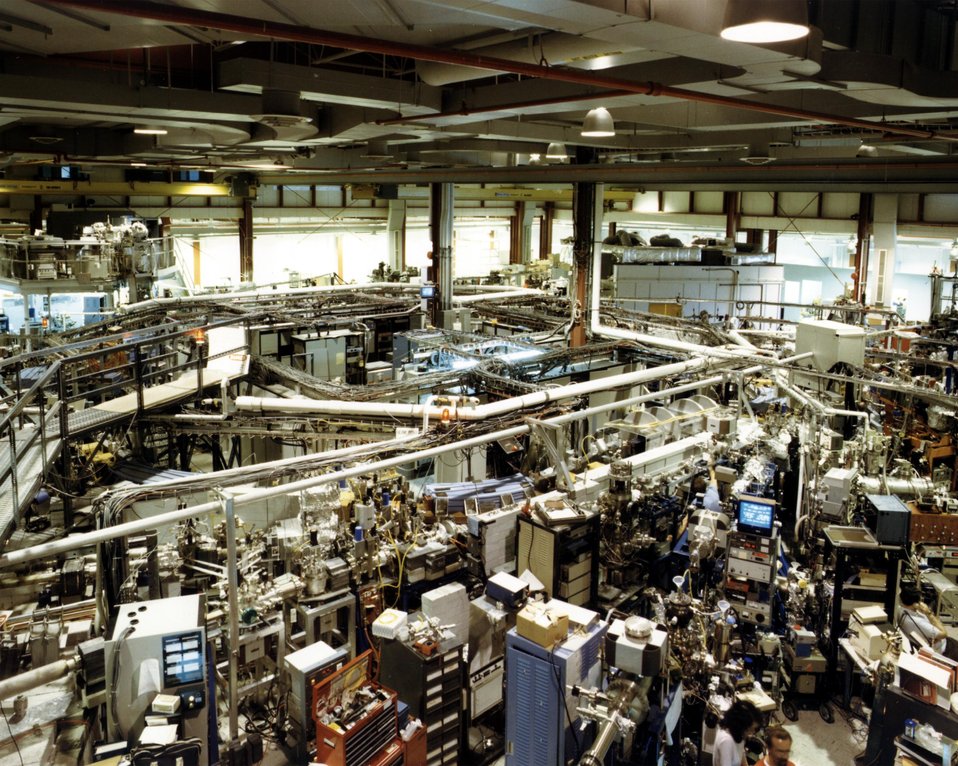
GENERAL VIEW OF THE EXPERIMENTAL FLOOR OF THE VACUUM ULTRAVIOLET (VUV) RING OF THE NSLS.

THE NATIONAL SYNCHROTRON LIGHT SOURCE IS THE NATION'S LARGEST FACILITY DEDICATED SOLELY TO THE PRODUCTION OF SYNCHROTRON RADIATION. IT PROVIDES INTENSE BEAMS OF X-RAYS AND ULTRAVIOLET LIGHT FOR USE BY SCIENTISTS FROM ALL OVER THE COUNTRY, FOR RESEARCH IN PHYSICS, CHEMISTRY, BIOLOGY AND VARIOUS TECHNOLOGIES. WORK AT THE NSLS INCLUDES BOTH BASIC RESEARCH AND PRACTICAL APPLICATIONS OF USE TO INDUSTRY, USERS OF THE NEW FACILITY INCLUDE VISITING SCIENTISTS FROM UNIVERSITIES, OTHER NATIONAL LABORATORIES, AND CORPORATIONS.